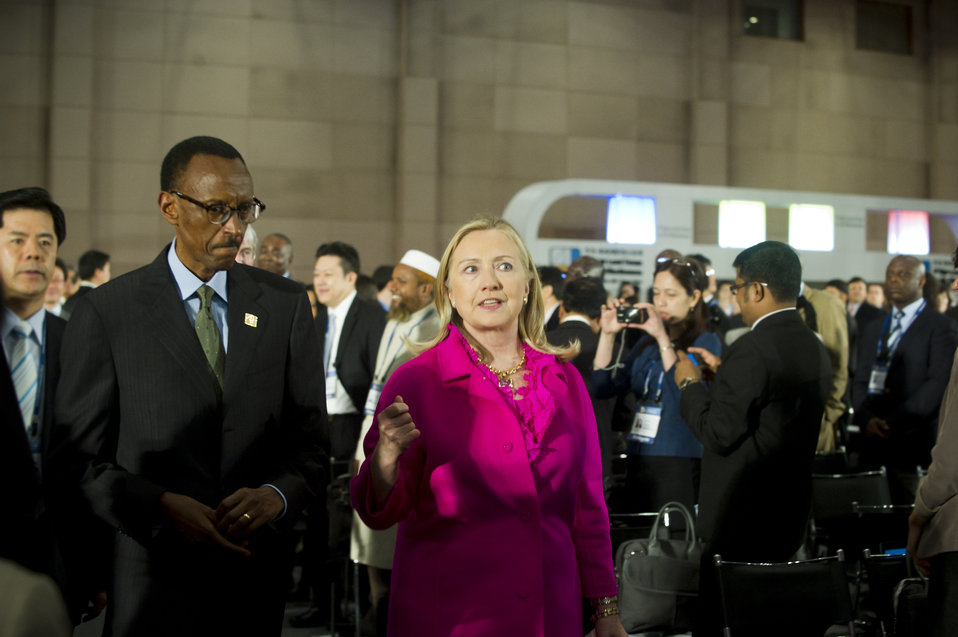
Secretary Clinton Walks With Rwandan President Kagame

U.S. Secretary of State Hillary Rodham Clinton walks with Republic of Rwanda President Paul Kagame to the opening ceremony of the Fourth High-Level Forum on Aid Effectiveness (HLF4) in Busan, South Korea, on November 30, 2011.